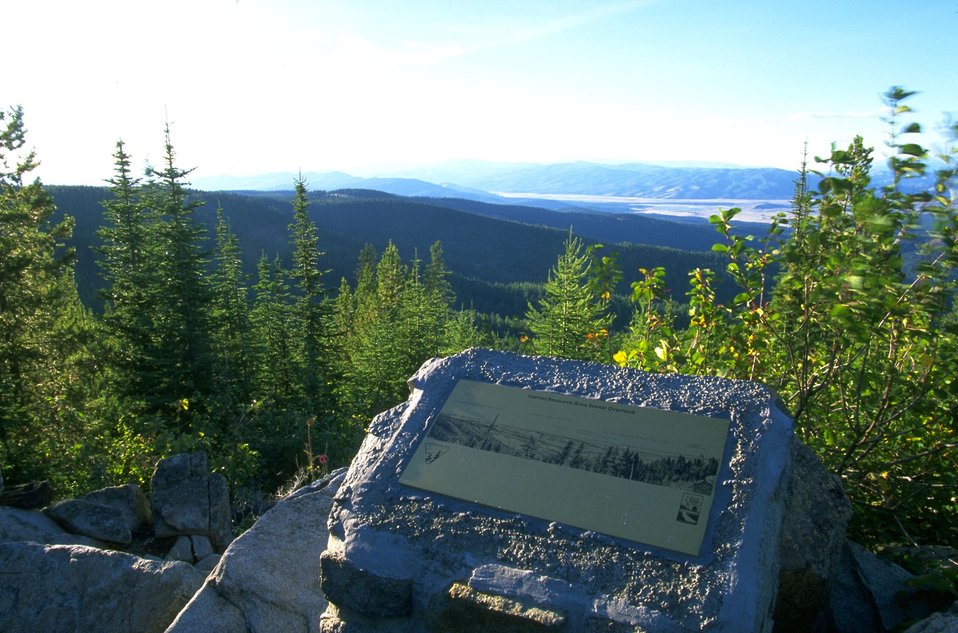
Garnet Back Country Byway--overlook interpretive sign